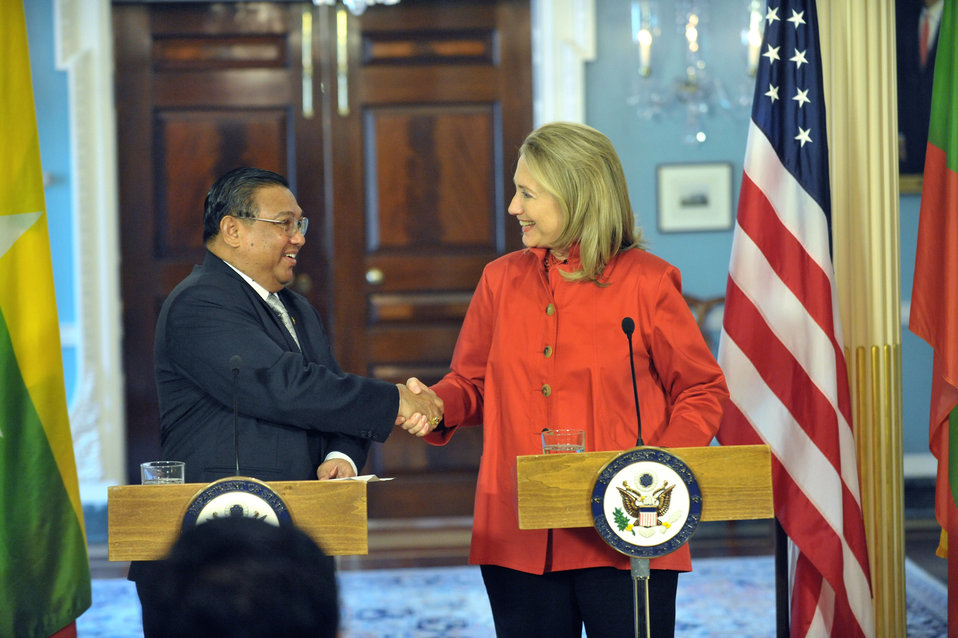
Secretary Clinton Meets With Burmese Foreign Minister U Wunna Maung Lwin

U.S. Secretary of State Hillary Rodham Clinton meets with Foreign Minister of Burma U Wunna Maung Lwin at the U.S. Department of State in Washington, D.C., on May 17, 2012.